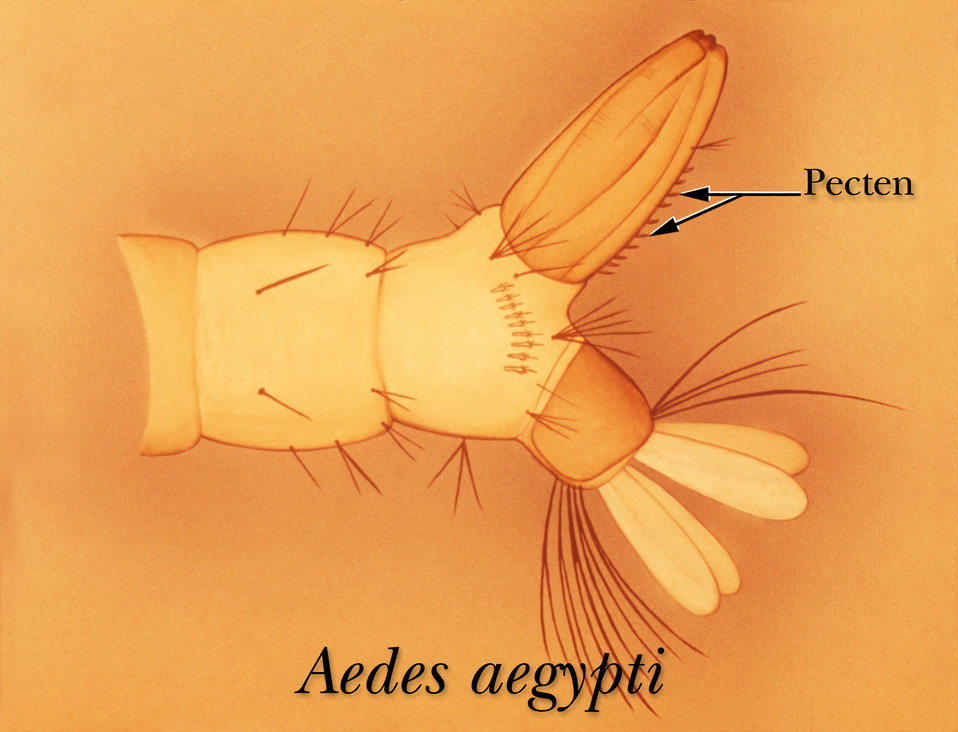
An illustration identifying the pecten on the terminal segments of an Aedes aegypti mosquito larva.